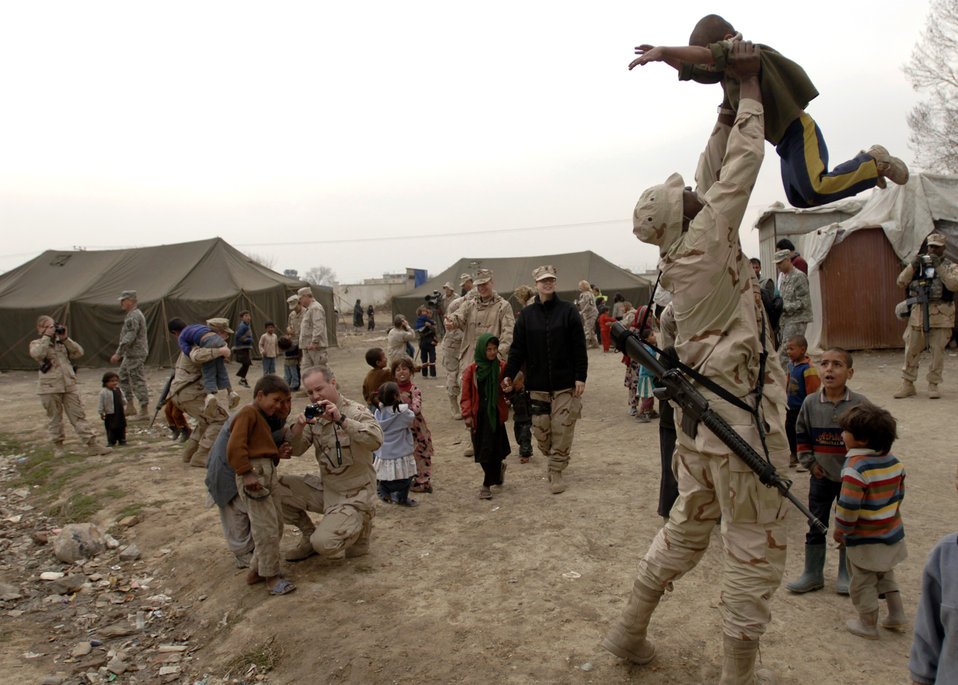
Joint forces volunteers donate time, goods

Department of Defense civilians and coalition servicemembers play with local refugee children March 16 in Dar Ul Aman in support of the volunteer community reach program. During the visit, some 200 bags of clothes, shoes and toys were distributed. The program volunteers provide this service every month thanks to donated items from U.S. citizens.